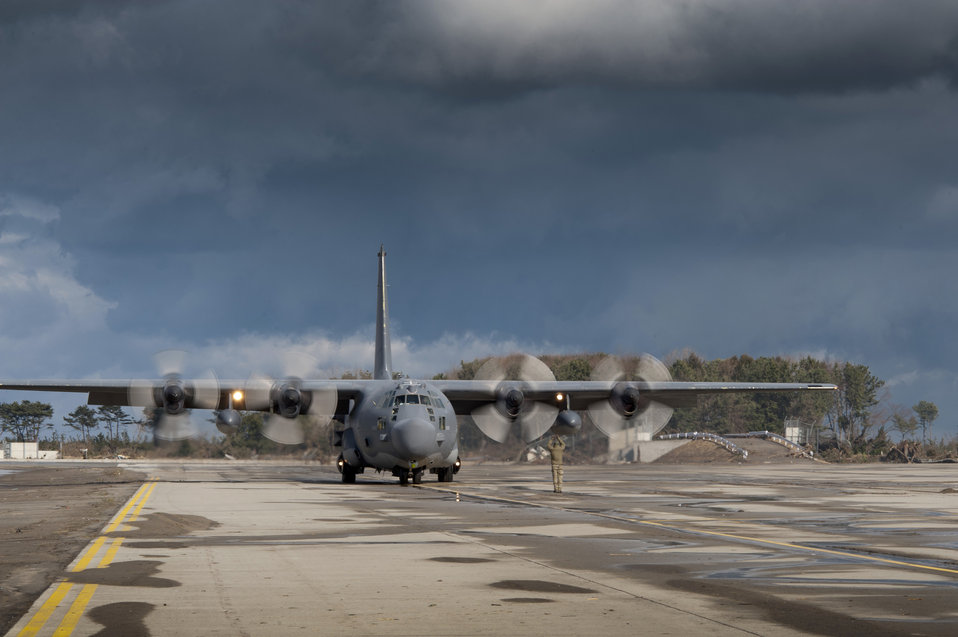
MC-130H Combat Talon II arrives at Sendai Airport

An Air Force combat controller assigned to the 320th Special Tactics Squadron marshals an MC-130H Combat Talon II after a successful landing March 16, 2011, at Sendai Airport, Japan.